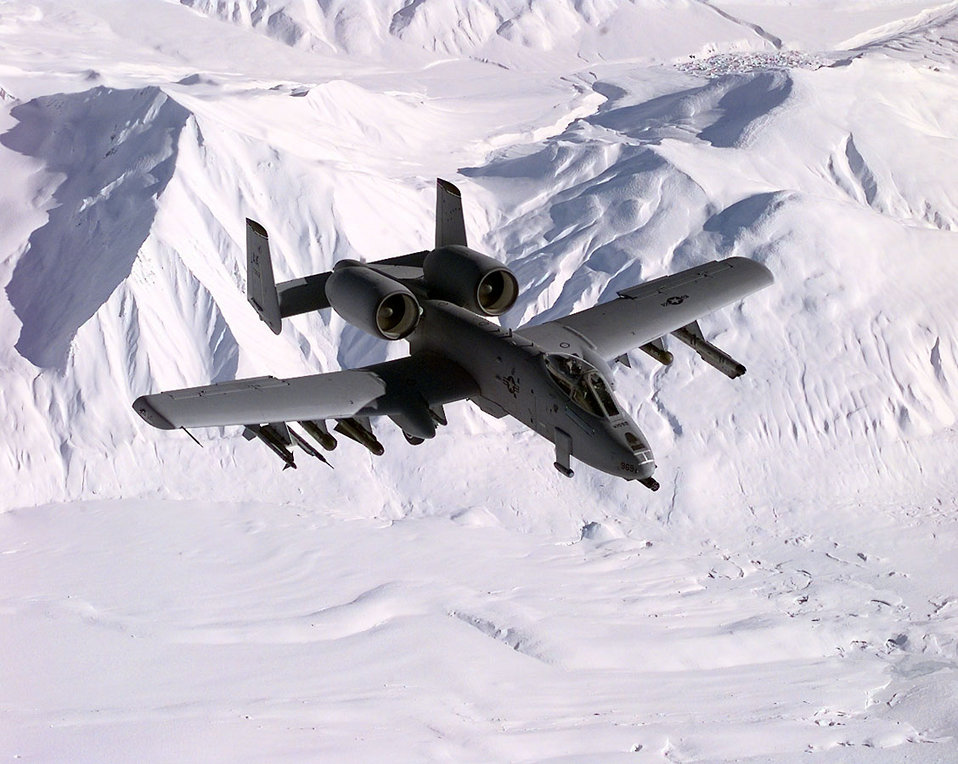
Alaskan Thunderbolt

1990's -- OVER ALASKA -- An A-10 Thunderbolt II assigned to the 355th Fighter Squadron, Eielson Air Force Base, Alaska moves into position behind a KC-135R Stratotanker from the 168th Air Refueling Squadron, Alaska Air National Guard to commence refueling operations in support of Exercise Northern Edge.